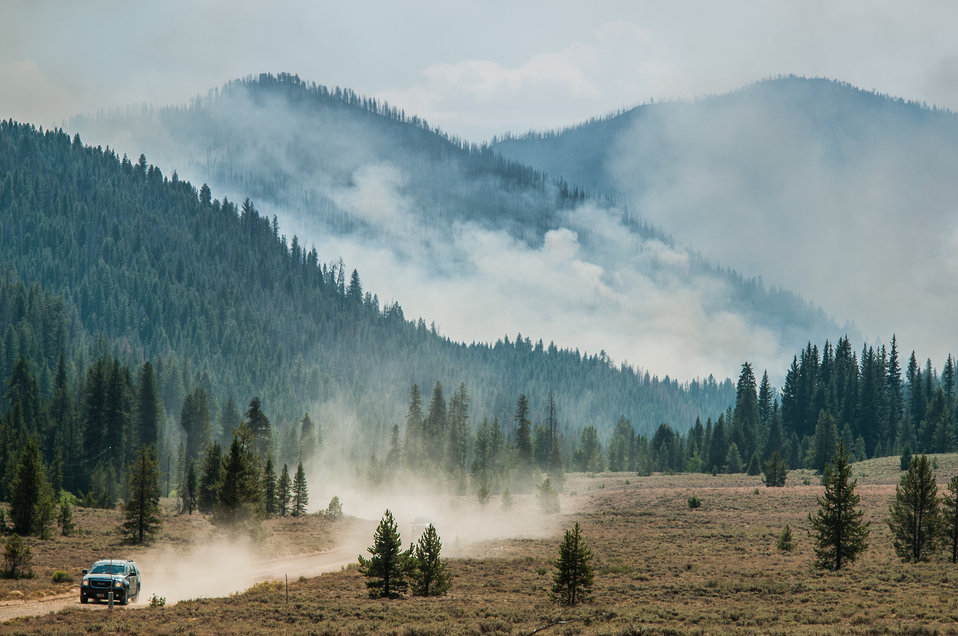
Structure protection, burnout of roads and natural barriers will help slow the progression of the main fire in the East Fork of Baker Creek, in the Sawtooth National Forest, during the Beaver Creek Fire, northwest of Hailey, ID, on Tuesday, Aug 20, 2013. Many homes are nestled in thick groves of trees. Feller and skidders are used to thin the density of trees close to homes.